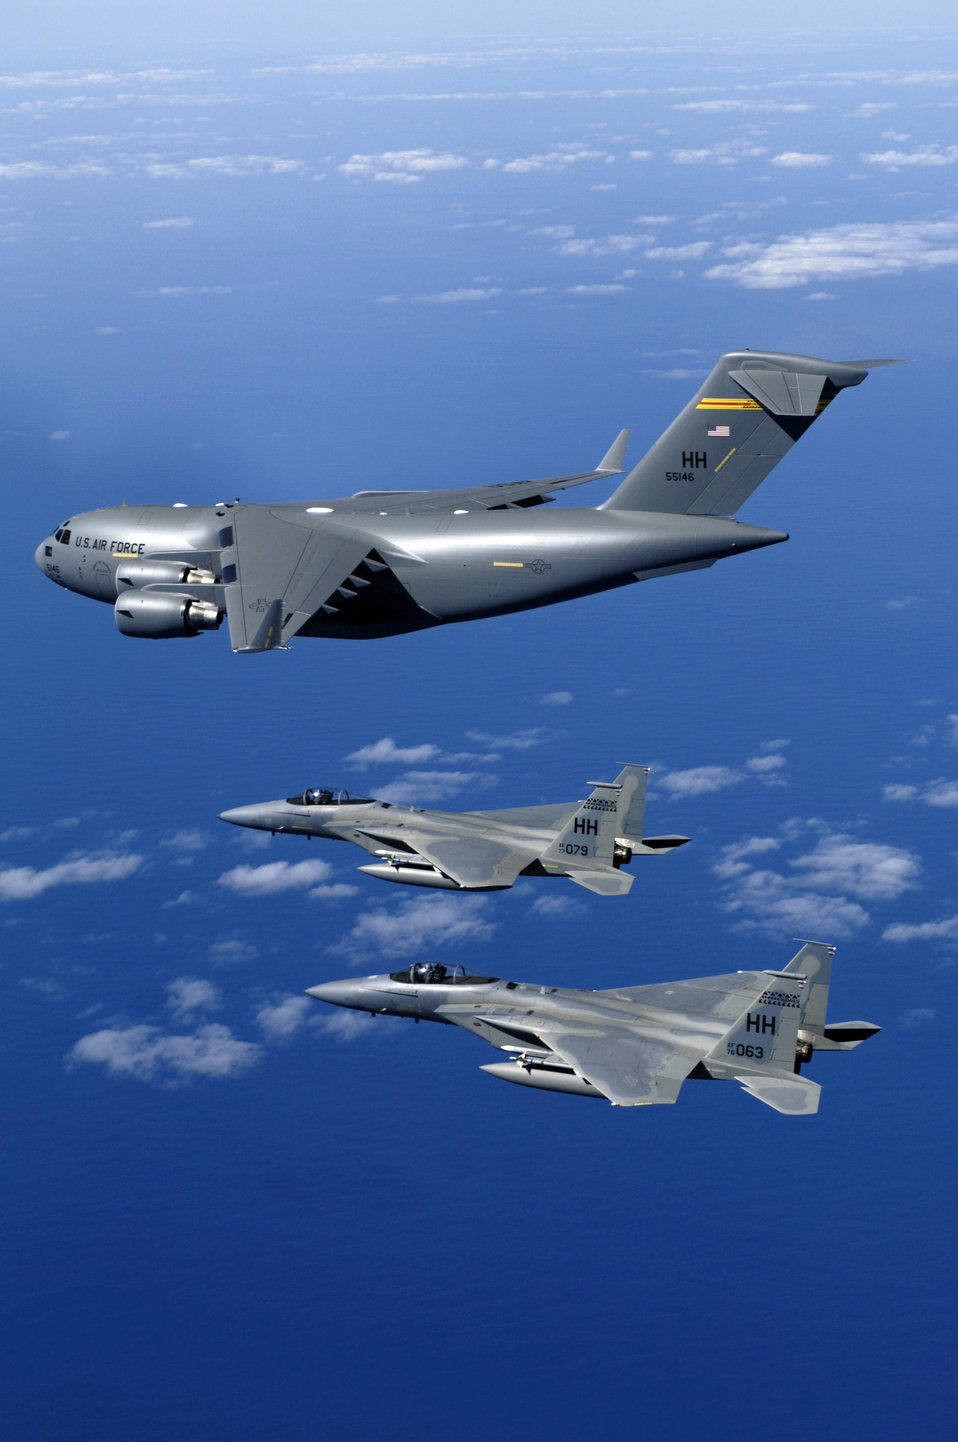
C-17 a first at Hickam AFB

HICKAM AIR FORCE BASE, Hawaii (AFPN) -- F-15B Eagles from the 199th Fighter Squadron, 154th Wing, Hawaii Air National Guard escort the first Hawaii-based C-17 Globemaster III to its home. Hickam is the first base outside the continental U.S. to permanently host the C-17. By the end of the year the base will be home to eight C-17s. The 15th Airlift Wing and the 154th Wing will jointly operate and maintain the aircraft.